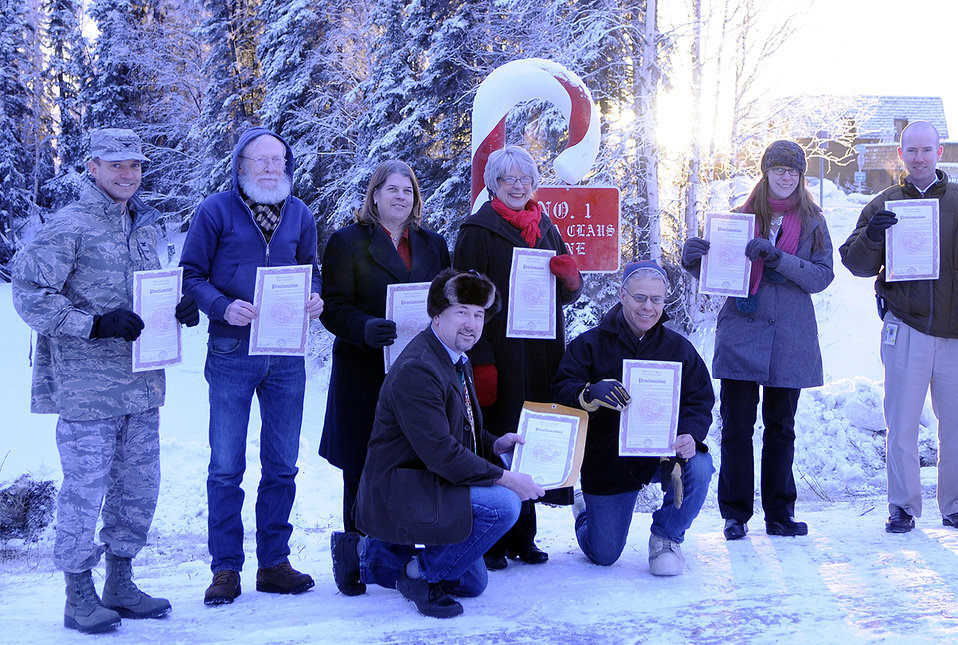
Col. Lynn Scheel joins North Pole, Alaska, community leaders Dec. 3, 2010, for a formal ceremony designating a permanent candy-cane marker as Santa's new address. By keeping the Letters to Santa program alive, North Pole volunteers can continue to recognize the efforts of the originators of the program at Eielson Air Force Base, Alaska. Colonel Scheel is the vice wing commander of the 354th Fighter Wing at Eielson AFB.